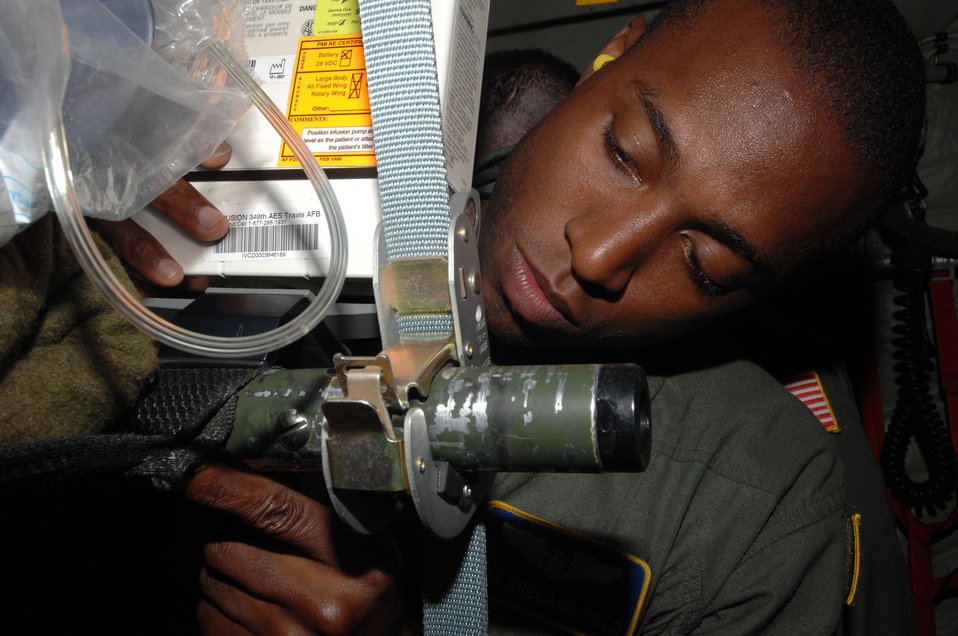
Getting it set just right

Senior Airman Breland Reed of the 349th Aeromedical Evacuation Squadron at Travis Air Force Base, Calif., secures a measurement device in a C-130J Super Hercules June 12 during Exercise Global Medic 2009. Incorporating both live and virtual simulation, the exercise tests the readiness of medical units in a joint training environment.